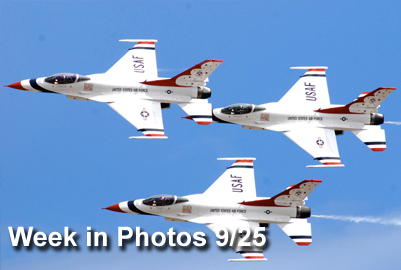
Week in Photos 9/25

Air Force Week in Photos for Sept.25 highlights photos from around the Air Force. In this photo by Staff Sgt. Mike Meares, the U.S. Air Force Demonstration Squadron Thunderbirds practice their performance over Hickam Air Force Base, Hawaii, for the